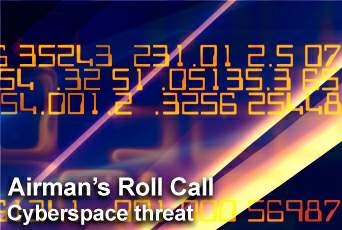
Airman's Roll Call: Cyber threat training

This week's Airman's Roll Call focuses on things Airmen can do to prevent cyber threats from harming Air Force computer networks.